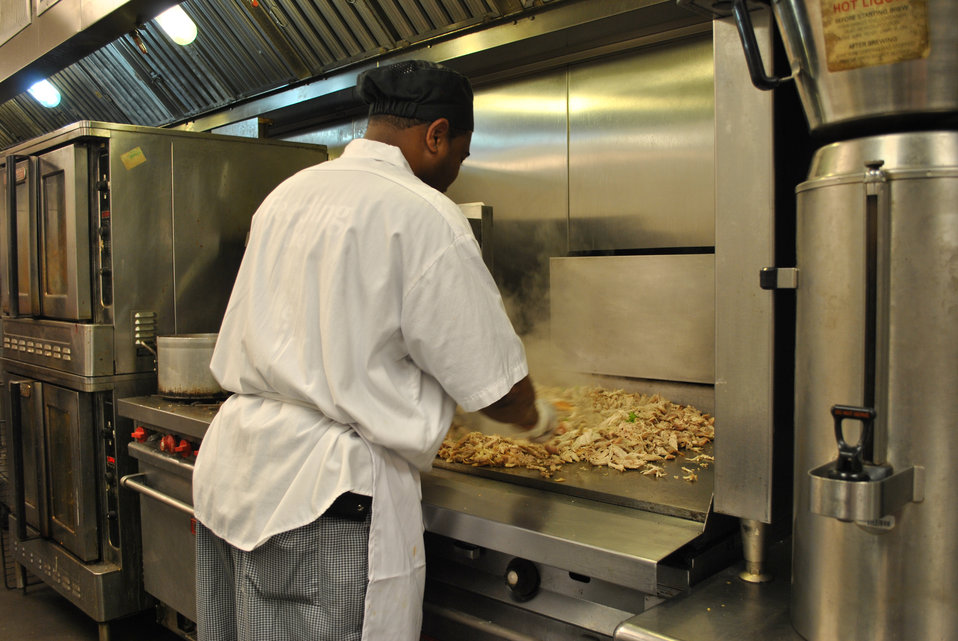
DC Central Kitchen Production cook Derrell Wainwright prepares a lunch of barbeque pulled chicken with green peppers on the flat top grill for volunteers and DC Central Kitchen staff.